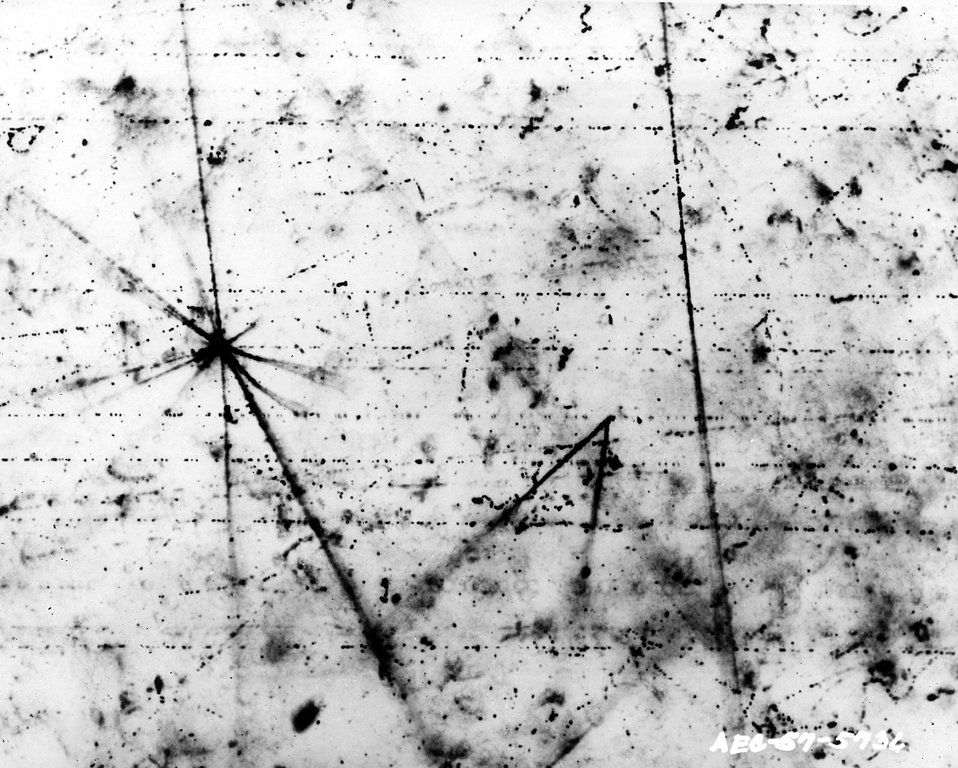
Photographic plate, or emulsion, exposed to billion-volt protons produced by the Cosmotron at Brookhaven National Laboratory. c. 1957